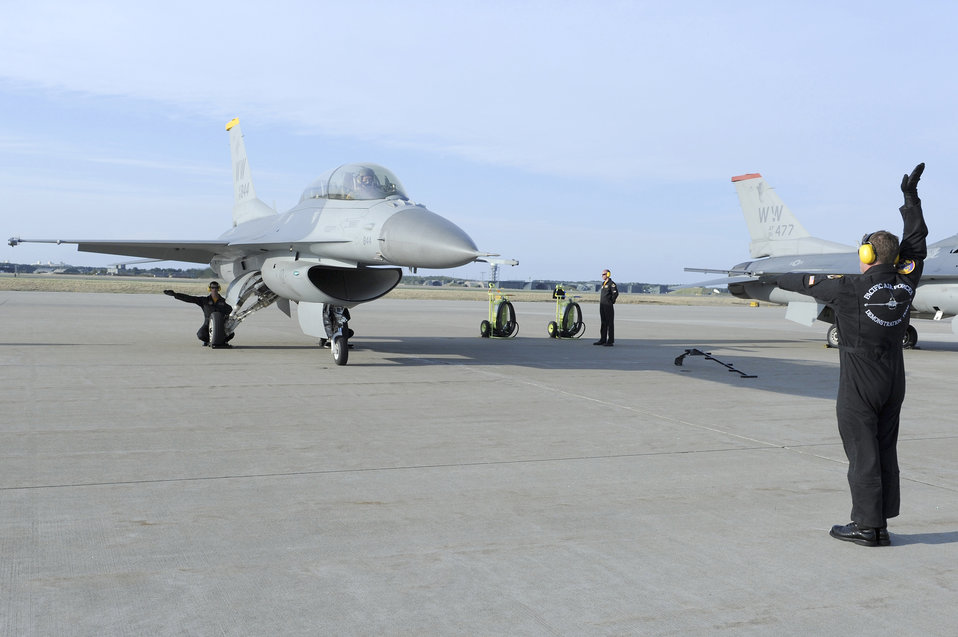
PACAF demo team certified to showcase F-16's aerial maneuvering might

A crew chief from the Pacific Air Forces F-16 aerial demonstration team signals a pilot May 10, 2011, at Misawa Air Base, Japan, during the team's certification evaluation.